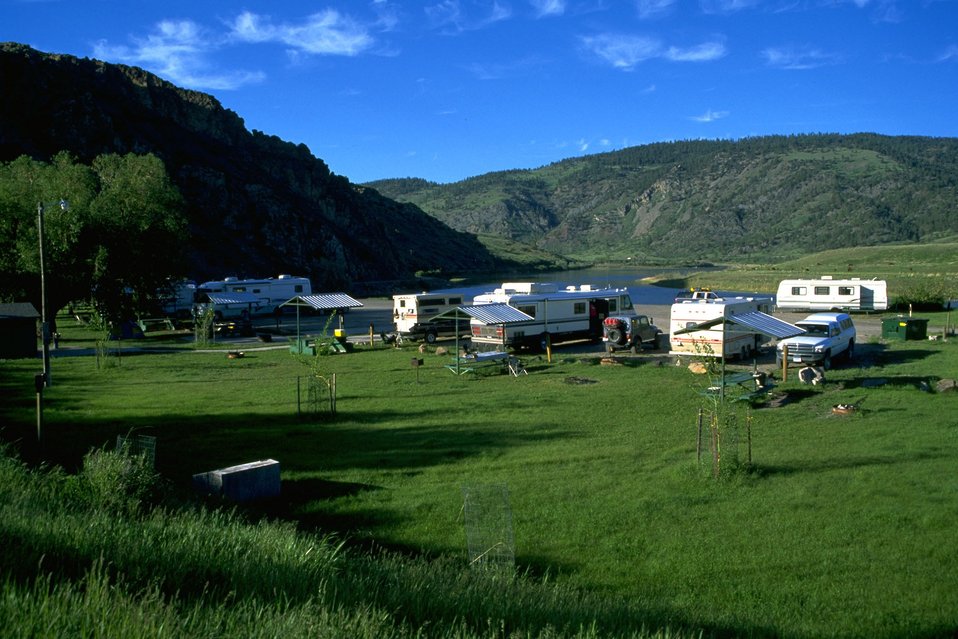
Holter Dam Campground